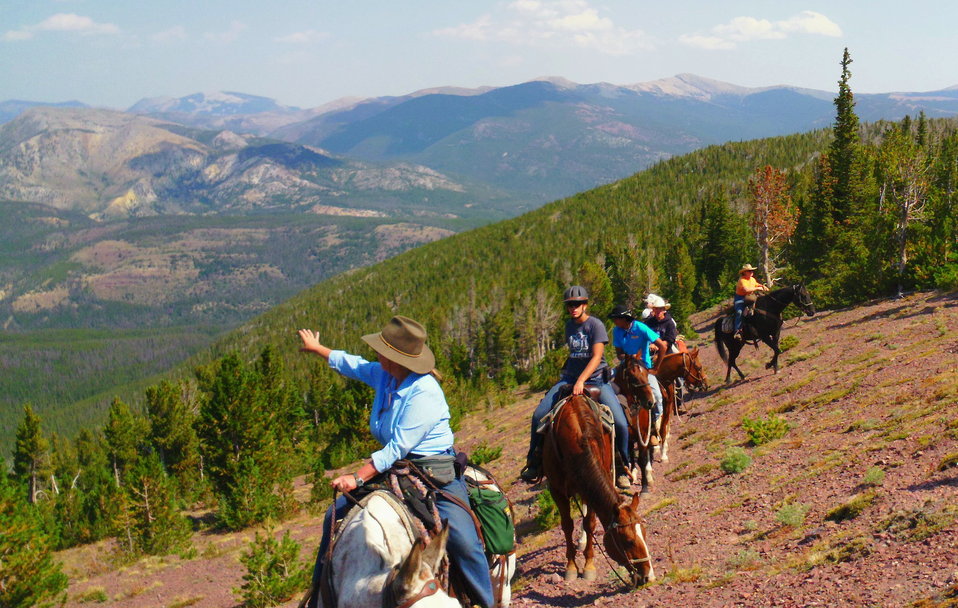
Wilderness vista untrammeled

U.S Forest Service ranger Joni Packard points out a landscape feature to a group of students on horseback as they ride in the Scapegoat Wilderness area in Montana during the filming of “Untrammeled.” The youth learned about the history of the Wilderness Act and the important legacy and heritage of wilderness that is now theirs.